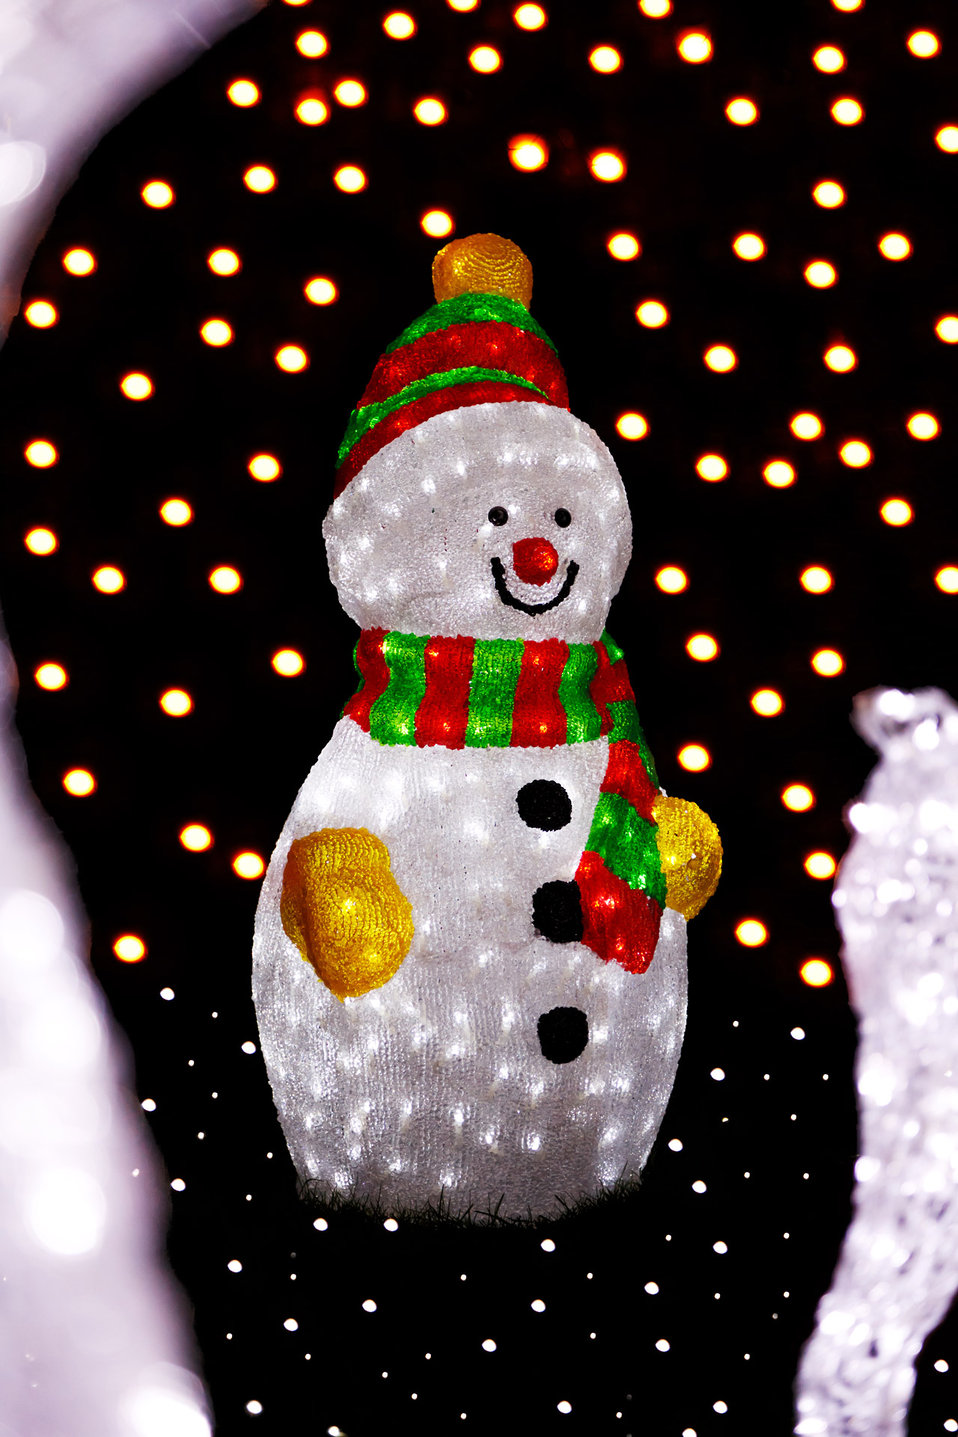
Snowman christmas decoration with lights in the background.